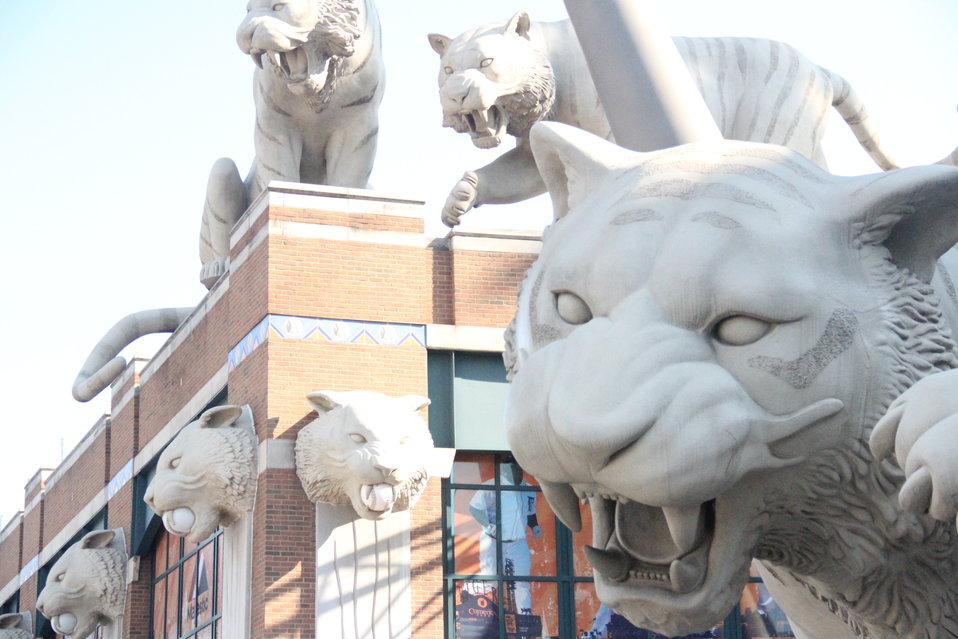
Statues at Detroit Tigers Stadium (2)